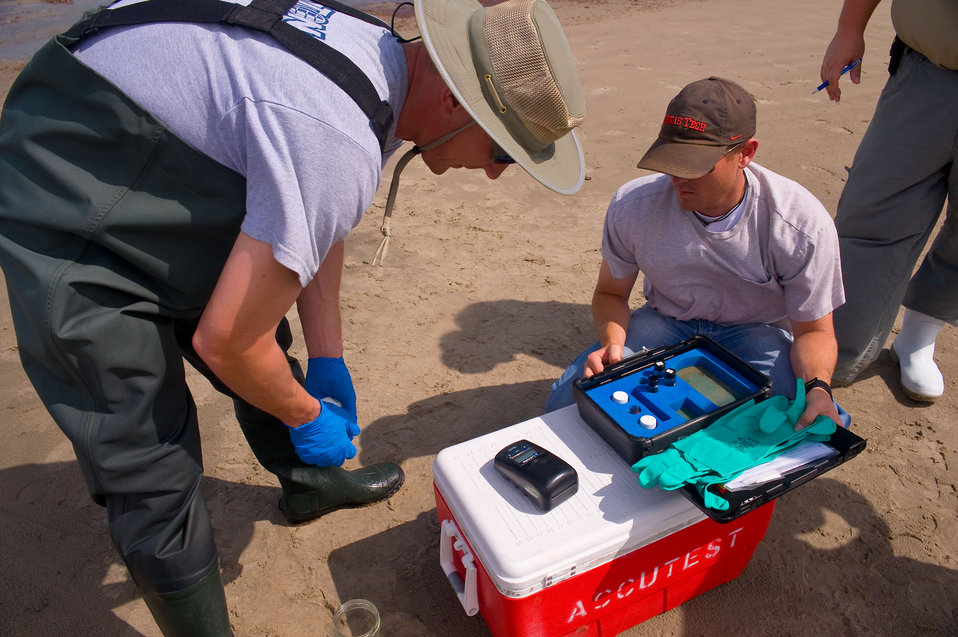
June 4, Analyzing water quality right at the source

EPA contractors test turbidity of a water sample right on the beach where it was collected. These water samples will be shipped to a lab for further chemical analysis, but on site scientists can record basic water quality information. Grand Isle State Park, Grand Isle, LA.